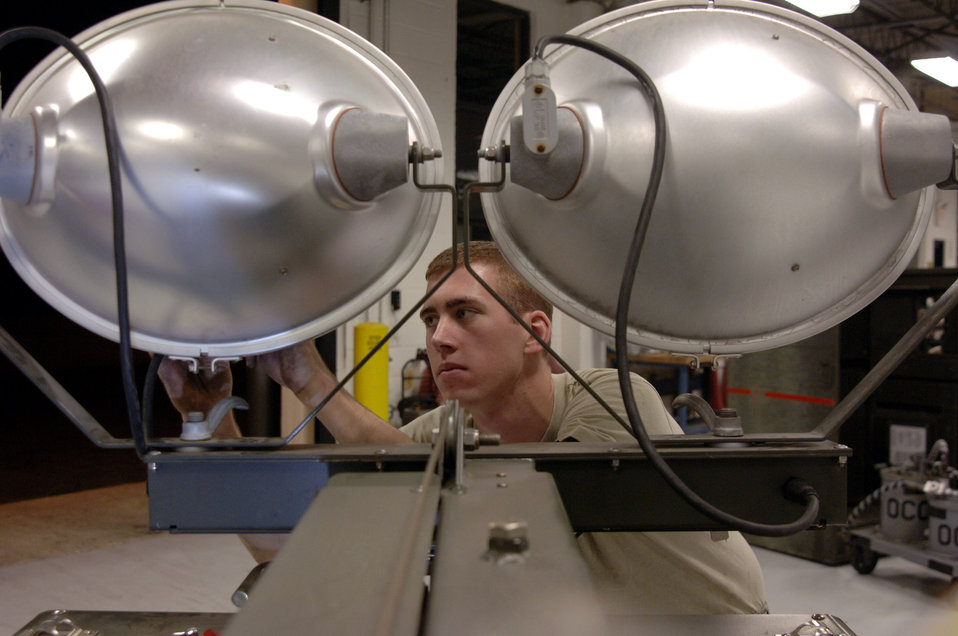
Let there be light

Airman 1st Class Anthony Dodge repairs floodlights Nov. 20 at the aerospace ground equipment shop at MacDill Air Force Base, Fla. The floodlights are used to illuminate an area when maintainers are working on an aircraft at night.